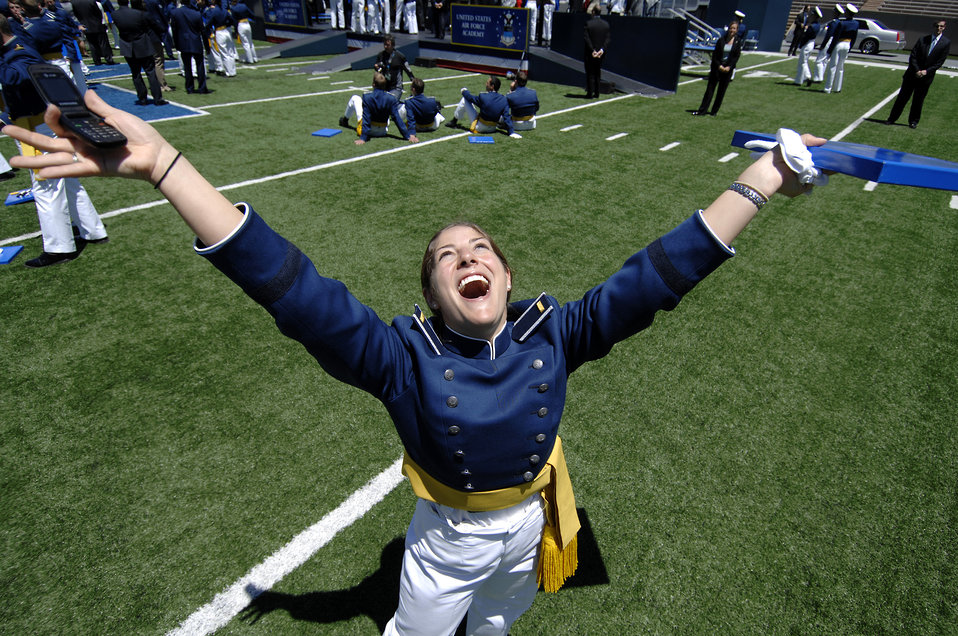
2009 U.S. Air Force Academy graduation

Newly commissioned 2nd Lt. Ashleigh Peck celebrates following graduation from the U.S. Air Force Academy May 27 at Falcon Stadium. She is slated to become an Air Force public affairs officer.